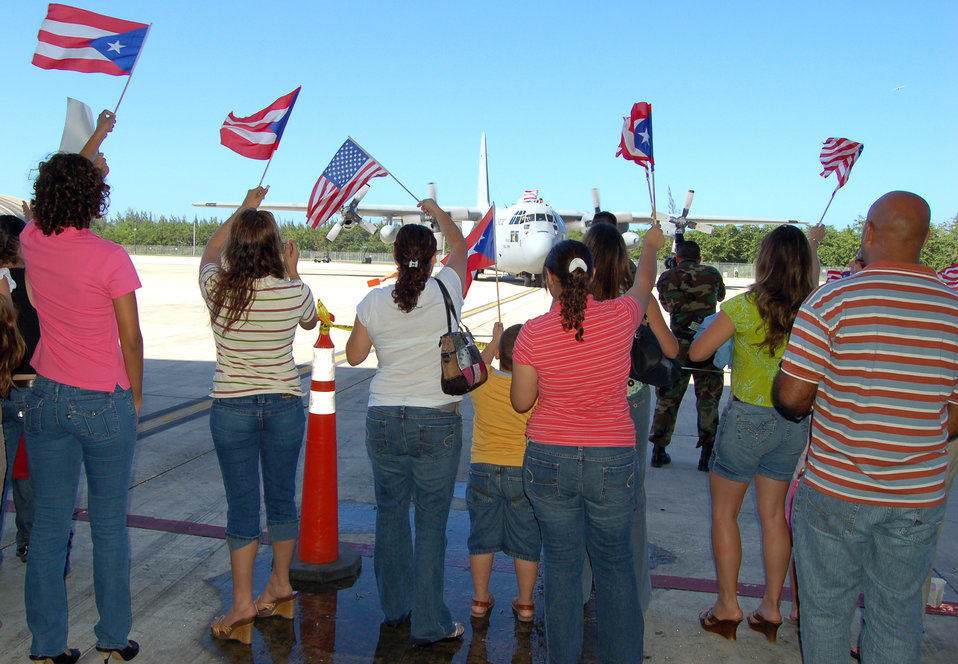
Buccaneers Return Home

With American and Puerto Rican flags flying, more than 150 people welcomed home 26 members of the 198th Airlift Squadron on their return home to Mu√±iz Air National Guard Base, Puerto Rico, Dec. 16. The unit deployed to Bagram Air Base, Afghanistan. The squadron is part of the 156th Airlift Wing of the Puerto Rico Air National Guard.